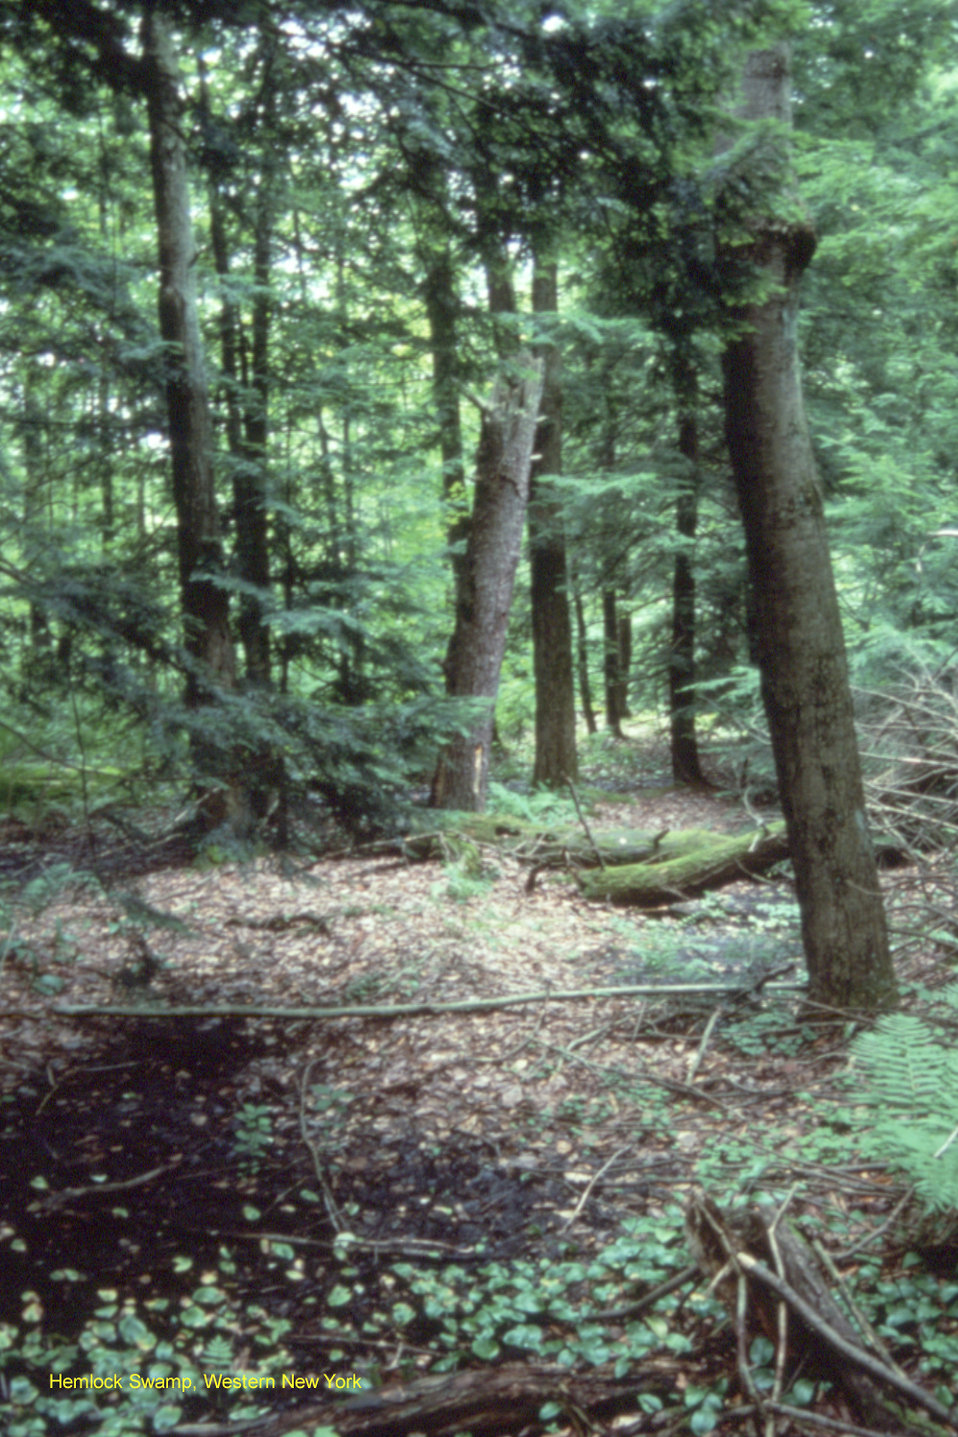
Hemlock Swamp, Western NY